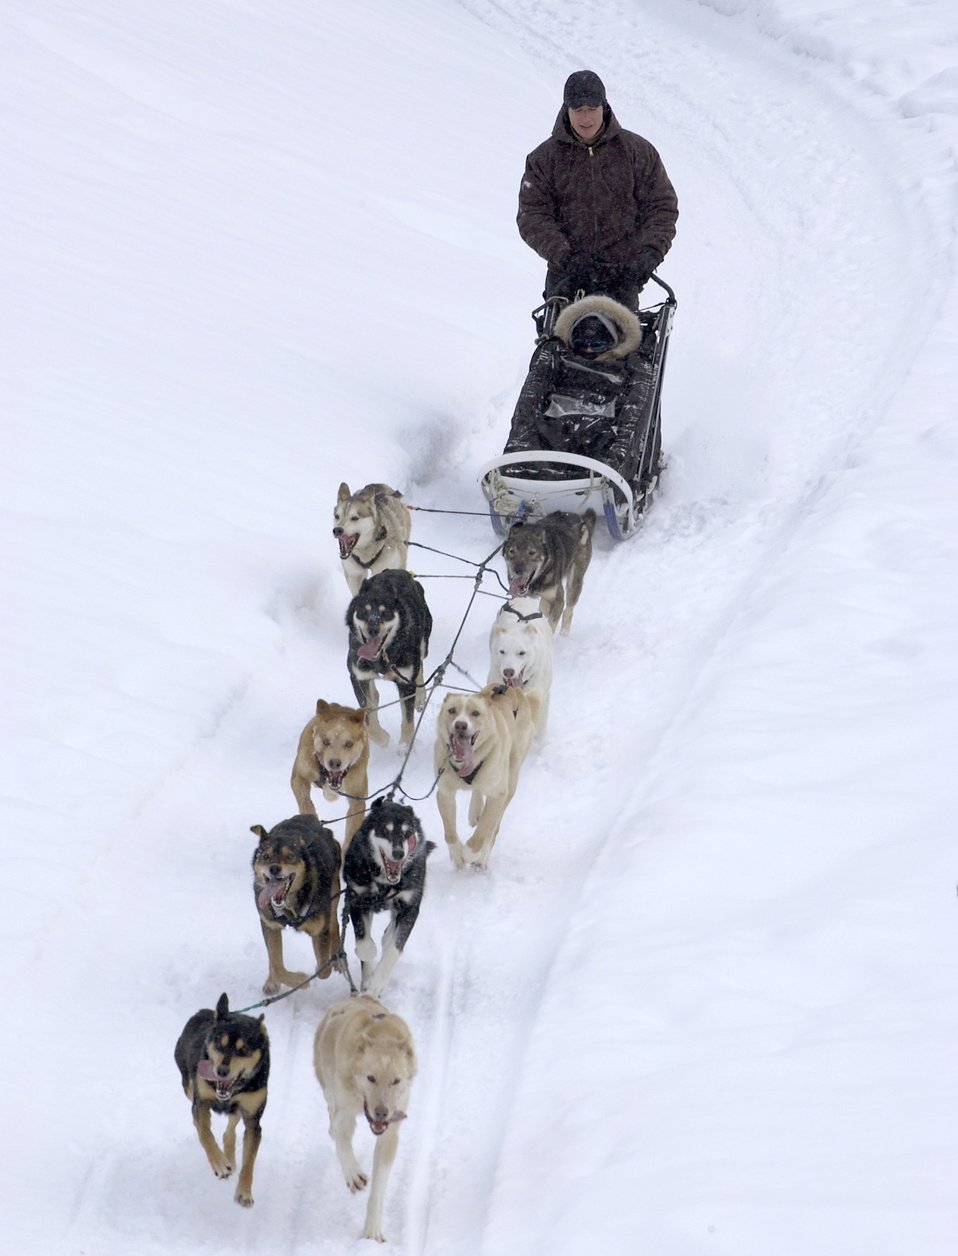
Mush!

Maj. (Dr.) Thomas Knolmayer leads his sled dog team on the final training run the day before the start of the 2006 Iditarod Sled Dog Race. Riding with Doctor Knolmayer is 10-year-old Katie Powell, daughter of Senior Master Sgt. Chris Powell of Travis Air Force Base, Calif. Katie has Ewing's Sarcoma, a rare bone cancer and she is fulfilling her dream of riding with an Iditarod sled dog team.